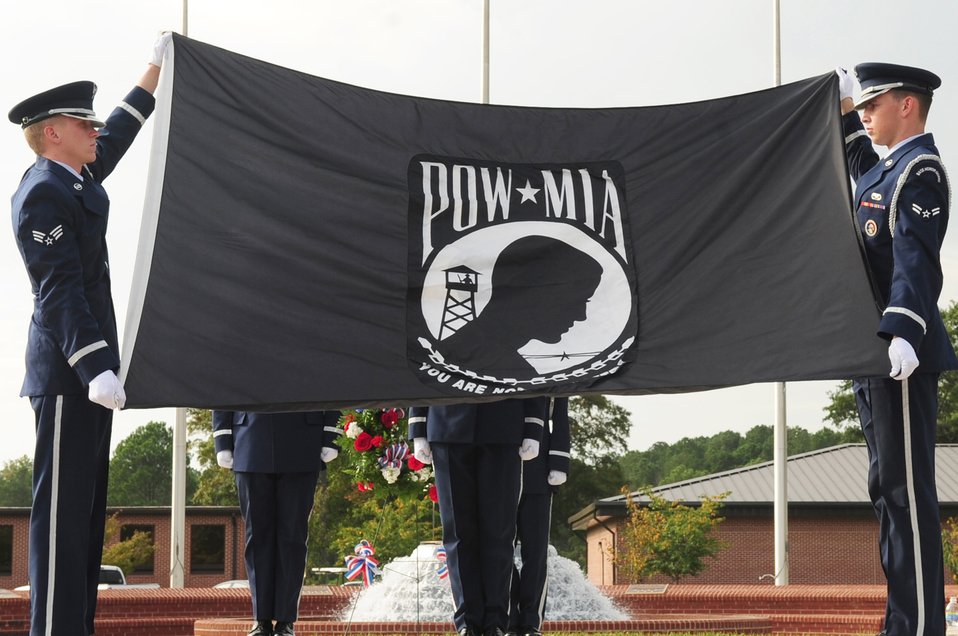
Air Combat Command honors POW/MIA Remembrance Day

Members of the 4th Fighter Wing Honor Guard at Seymour Johnson Air Force Base, N.C., fold the Prisoner of War/Missing in Action flag during a remembrance ceremony Sept. 18, 2009. Many POWs from the local area attended to pay their respects and were honored for their sacrifices.